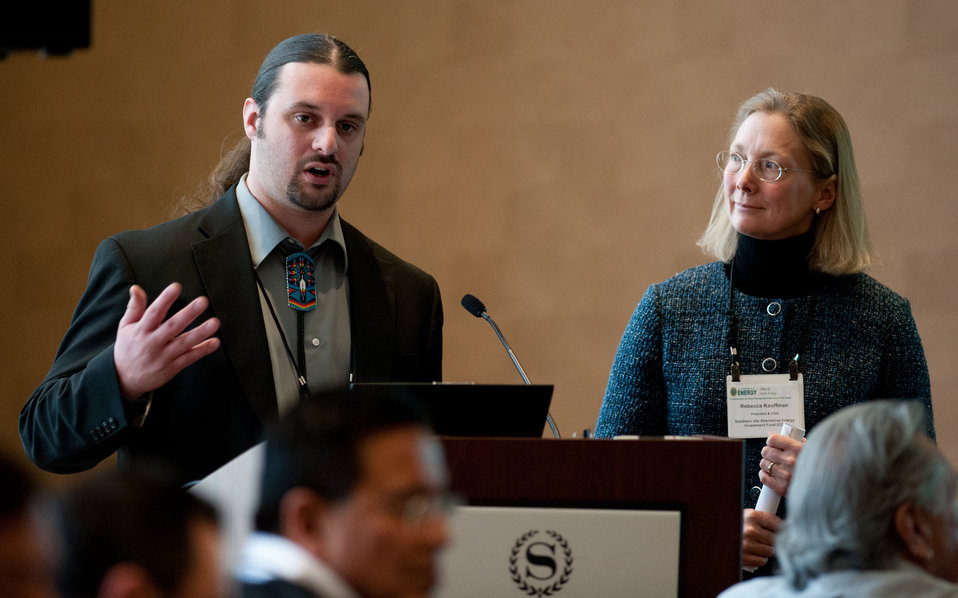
Indian Transmission Forum

Travis Stone, Shoshone Bannock Tribe, and Rebecca Kauffman, Southern Ute Alternative Energy Investment Fund, presenting at the Office of Indian Energy Exploring the Business Link Opportunity: Transmission and Clean Energy Development in the West Forum held Feb. 7-8, 2012.